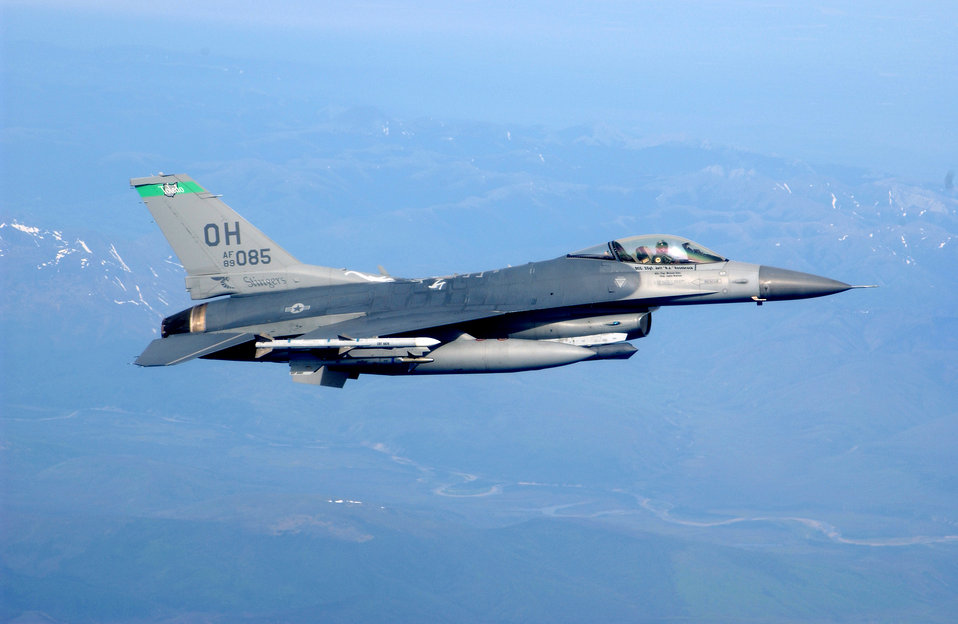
Fighting Falcon shines at Northern Edge

An F-16 Fighting Falcon from the Ohio Air National Guard's 180th Fighter Wing performs manuevers during Exercise Northern Edge '06 at Eielson Air Force Base, Alaska, on Friday, June 9, 2006. Northern Edge '06 is a joint training exercise hosted by Alaskan Command.